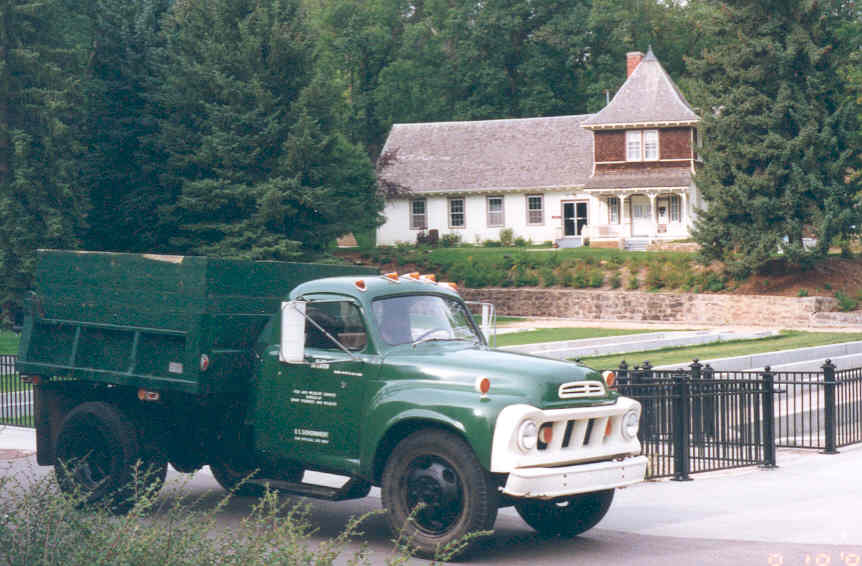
1963 Studebaker dump truck

Studebaker 1963 dump truck in front of D.C. Booth National Fish Hatchery building and raceways.